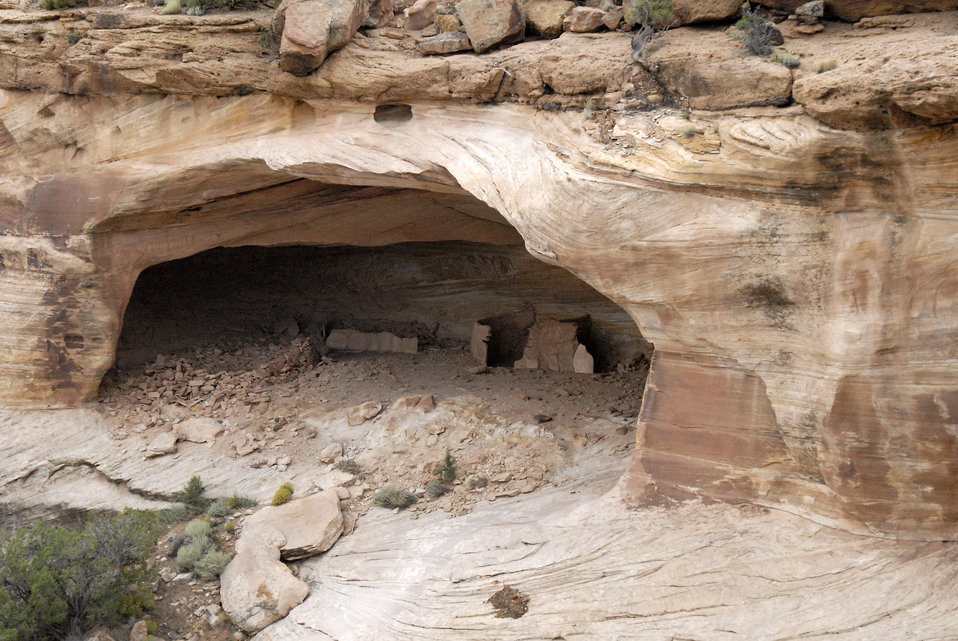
Yucca Cave in Canyon de Chelly National Monument in Chinle, Arizona on September 11, 2008.